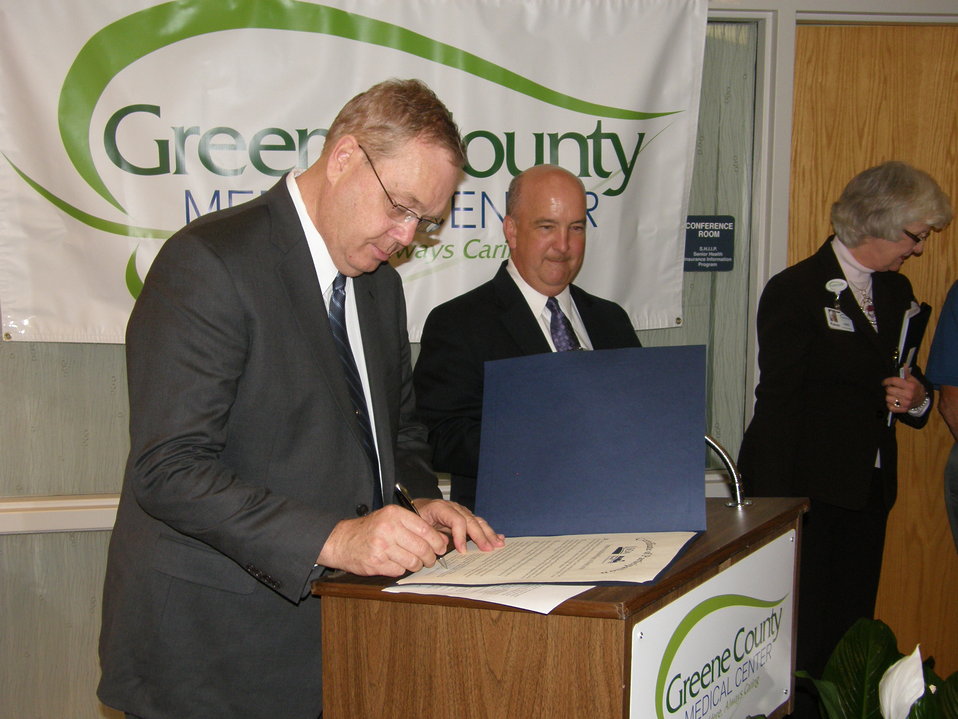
Greene County Medical Center

Agriculture Under Secretary for Rural Development Dallas Tonsager announced that Greene County Medical Center in Iowa will receive loans to expand and renovate a 75-year-old medical facility and create a state-of-the-art medical campus during a visit to the hospital on May 14, 2012. Iowa State Director Bill Menner looks on.